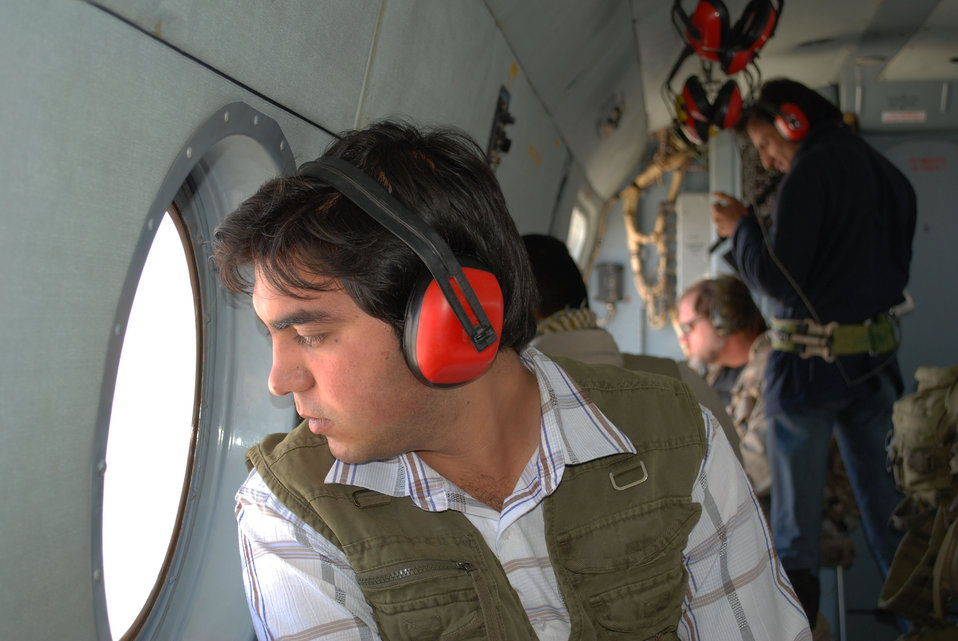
'On the Road' in Kandahar